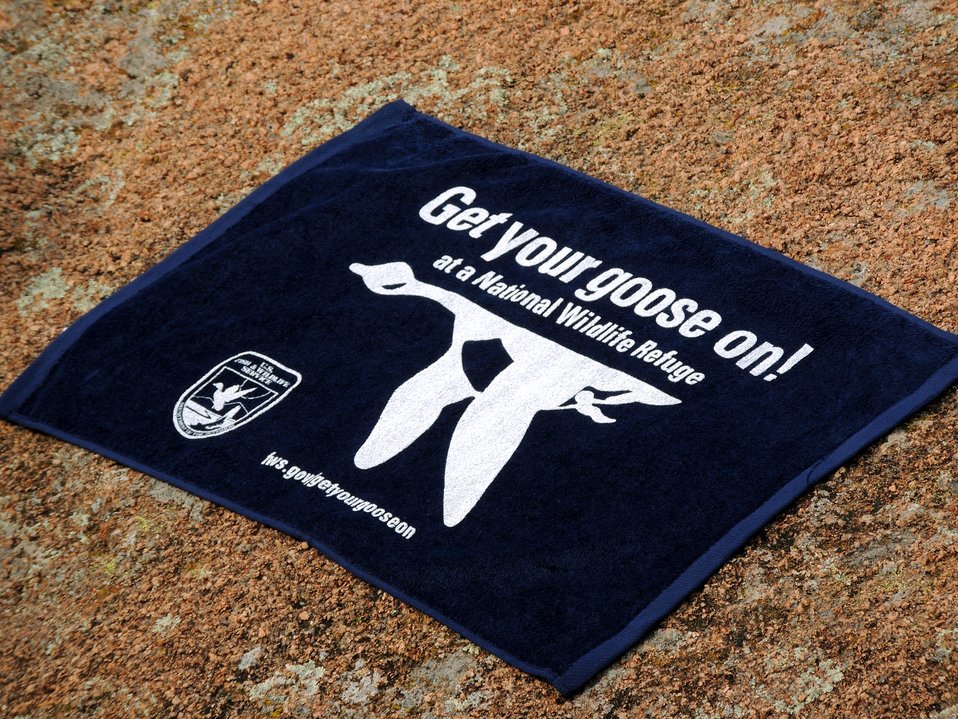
Get Your Goose On!

Wichita Mountains National Wildlife Refuge in Oklahoma.